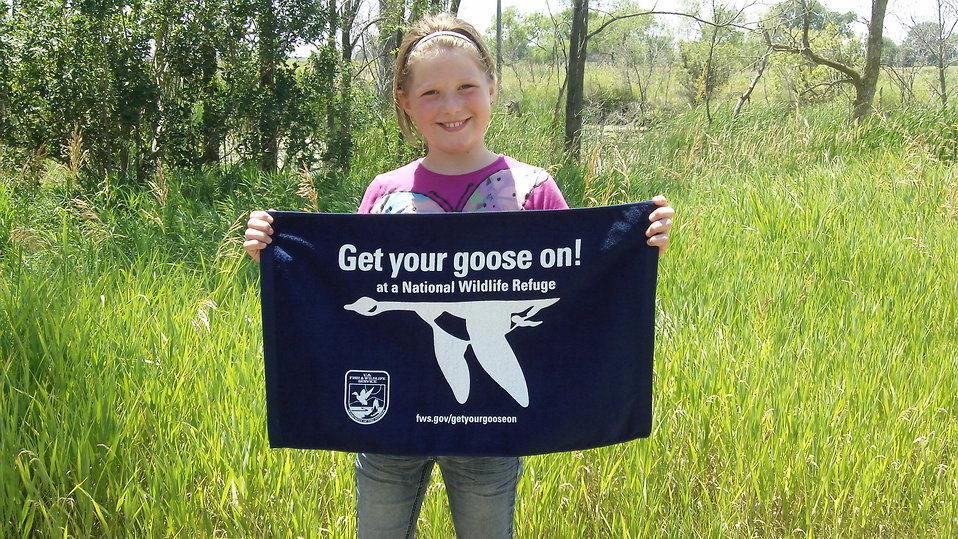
Get Your Goose On!

Photo taken at Huron Wetland Management District in east-central South Dakota.